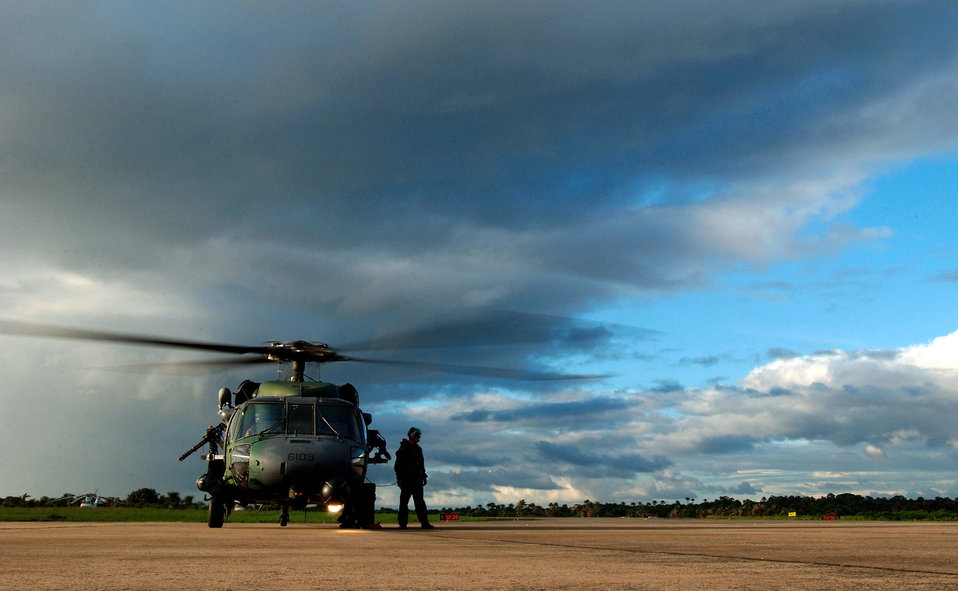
Prep for flight

LUNGI, Sierra Leone -- An HH-60G Pave Hawk helicopter from the 56th Rescue Squadron prepares to take off from here July 19 for a functional check flight. Airmen of the 56th RQS are providing recovery and emergency evacuation capability for the humanitarian assistance survey team in Liberia.